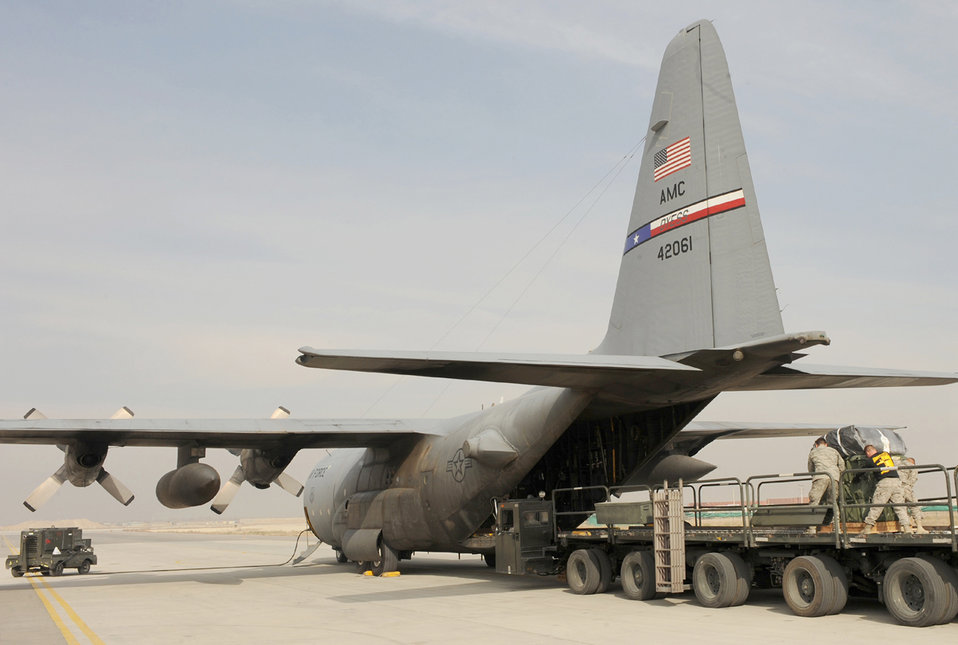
386th AEW members fly first airdrop missions in Afghanistan

Airmen and Soldiers help load container delivery system bundles into the back of a C-130 Hercules recently at Bagram Air Field, Afghanistan. A crew from the wing's 737th Expeditionary Airlift Squadron flew an airdrop mission in Afghanistan and dropped more than 22,000 pounds of supplies to ground troops Nov. 21, 2010, validating the wing's ability to perform airdrop missions in support of Operation Enduring Freedom.